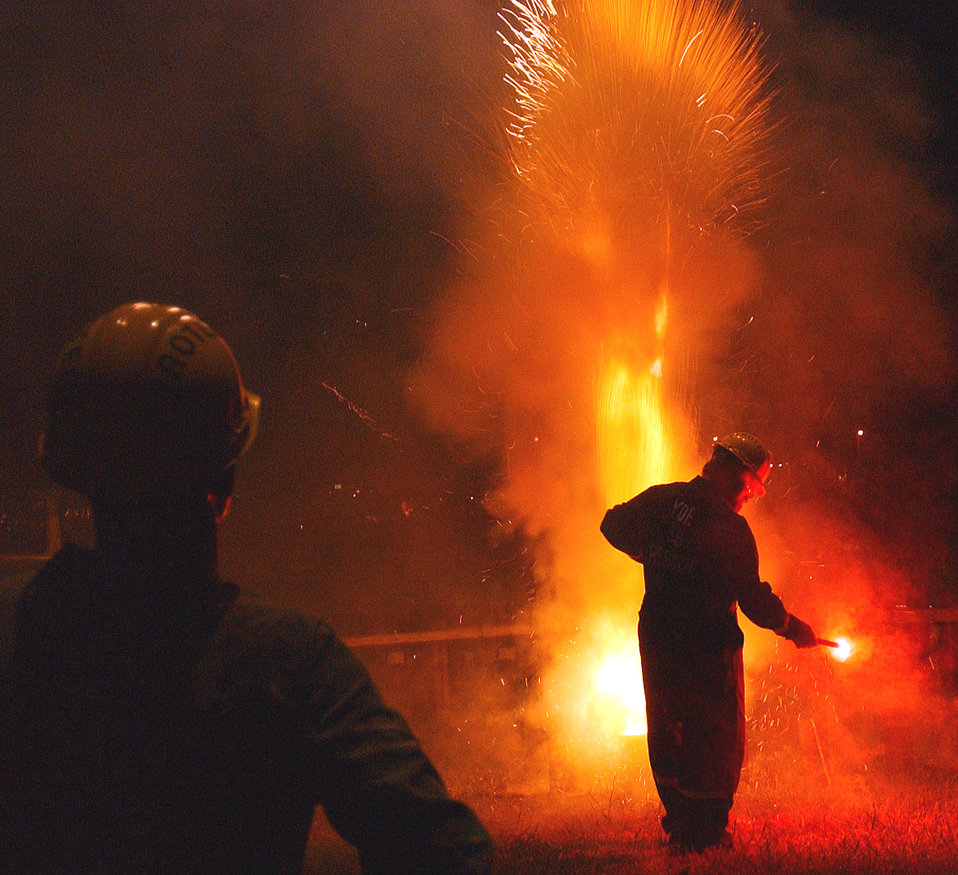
Civilian ensures Fourth of July celebration goes off with bang

SEYMOUR JOHNSON AIR FORCE BASE, N.C. -- Trevor Howett sets off a 5-inch shell during a Fourth of July celebration as his wife, Christine, looks on during the 30-minute gala. Mr. Howett's uncle, Bob Howett, of the 4th Civil Engineer Squadron, has been putting on fireworks shows here since the 1980s. This year, his team will set off more than 300 shells plus another 300 during the finale.